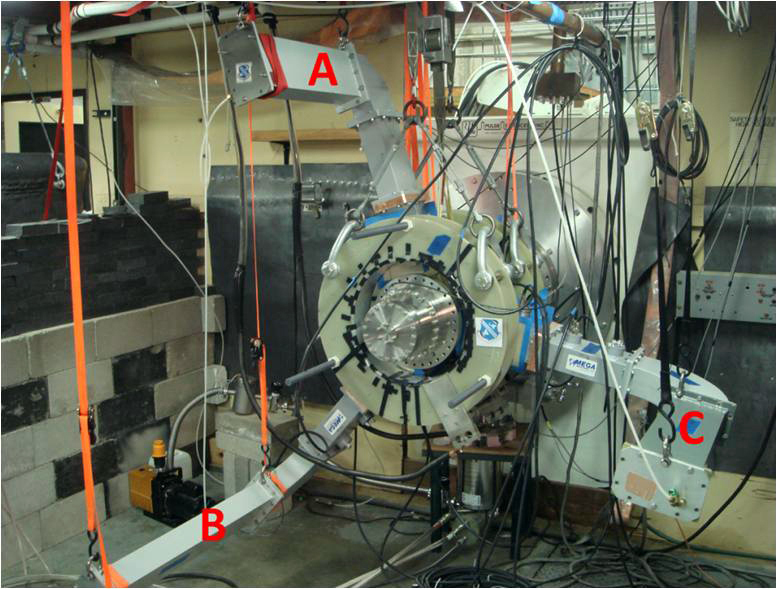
New AFOSR Magnetron may help defeat enemy electronics

Researchers at the University of Michigan in Ann Arbor, Mich., invented a new type of magnetron that could improve radar resolution. Their work is funded by the Air Force Office of Scientific Research at Arlington, Va.